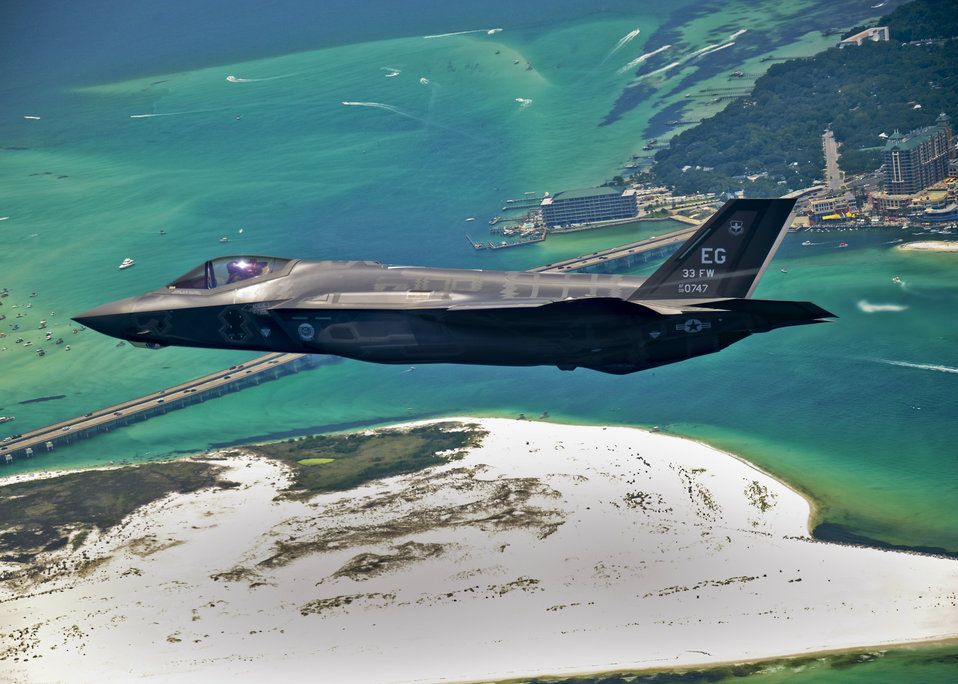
Welcome home

An F-35 Lightning II flies over Destin, Fla., before landing at its new home at Eglin Air Force Base, Fla., July 14, 2011. Its pilot, Lt. Col. Eric Smith is the first Air Force qualified F-35 pilot and is assigned to the 58th Fighter Squadron.